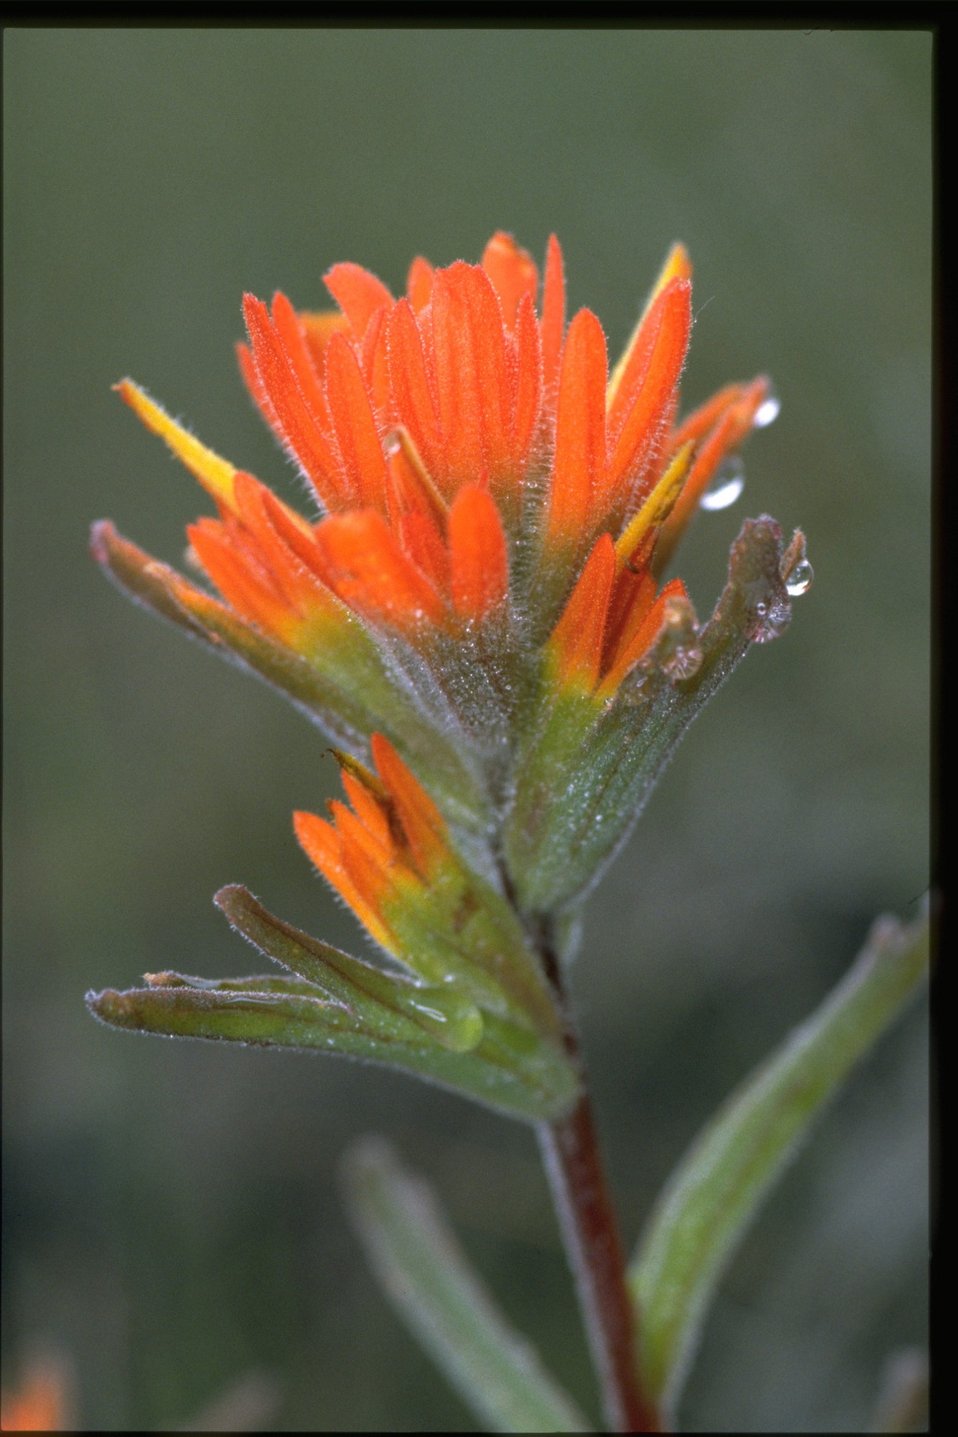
Closeup shot of Castilleja.